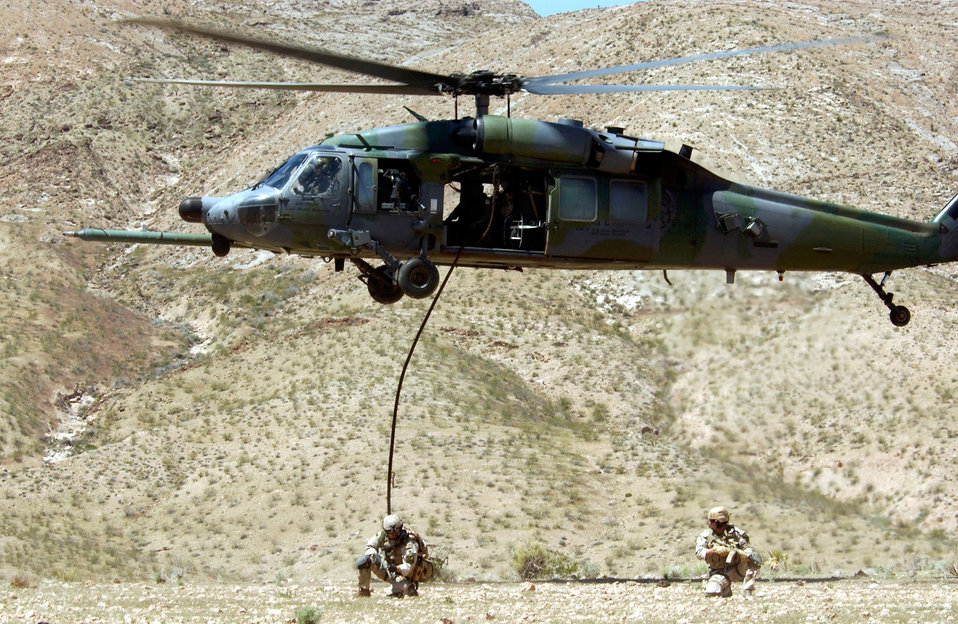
Hover and cover

NELLIS AIR FORCE BASE, Nev. -- Senior Master Sgt. Paul Koester (left) and Staff Sgt. William Hardin, both from the 58th Rescue Squadron here provide ground cover while a HH-60G Pave Hawk from the base’s 66th Rescue Squadron prepares to land during a training mission.